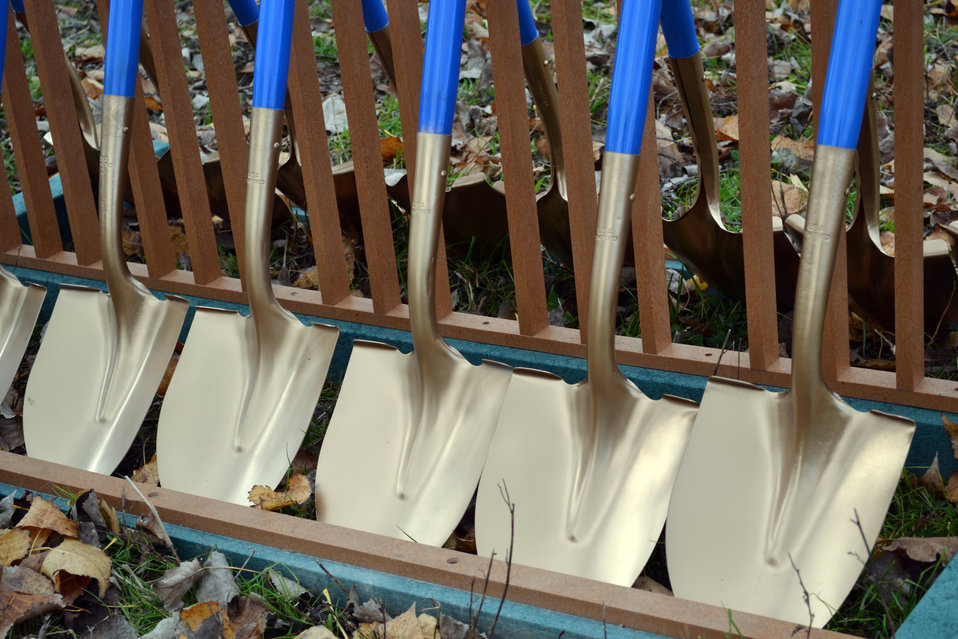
Shovels

Detroit River International Wildlife Refuge groundbreaking celebration.